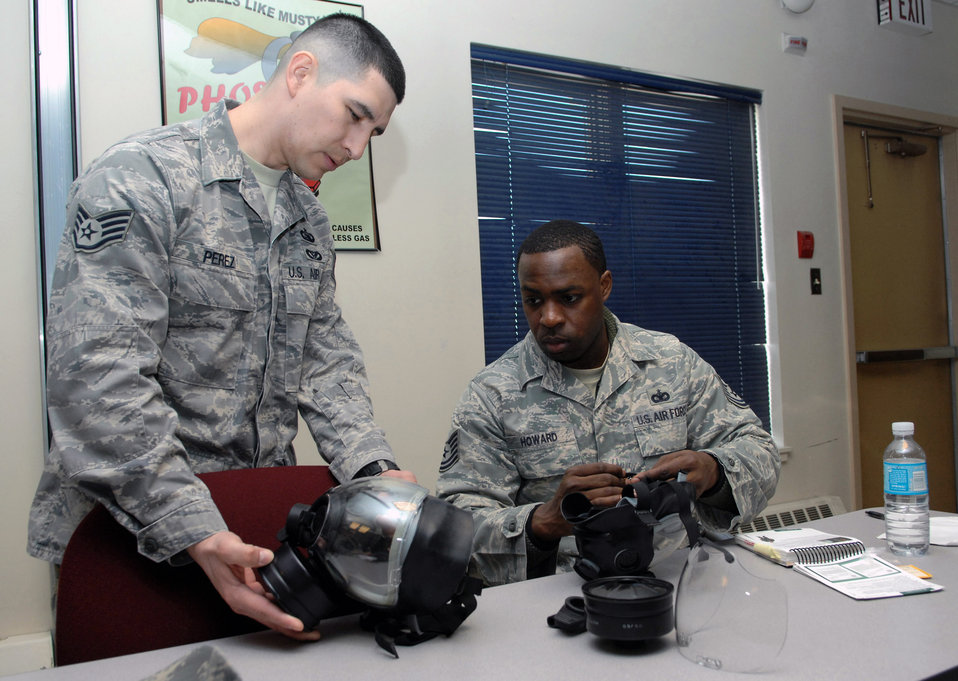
Training that matters

Staff Sgt. Oscar Perez (left) shows Tech Sgt. Chris Howard how to apply the second skin on a gas mask during a chemical warfare training class Apr. 7 at Eielson Air Force Base, Alaska. Chemical warfare training teaches Airmen how to survive and operate in hazardous environments whether deployed or at home station.